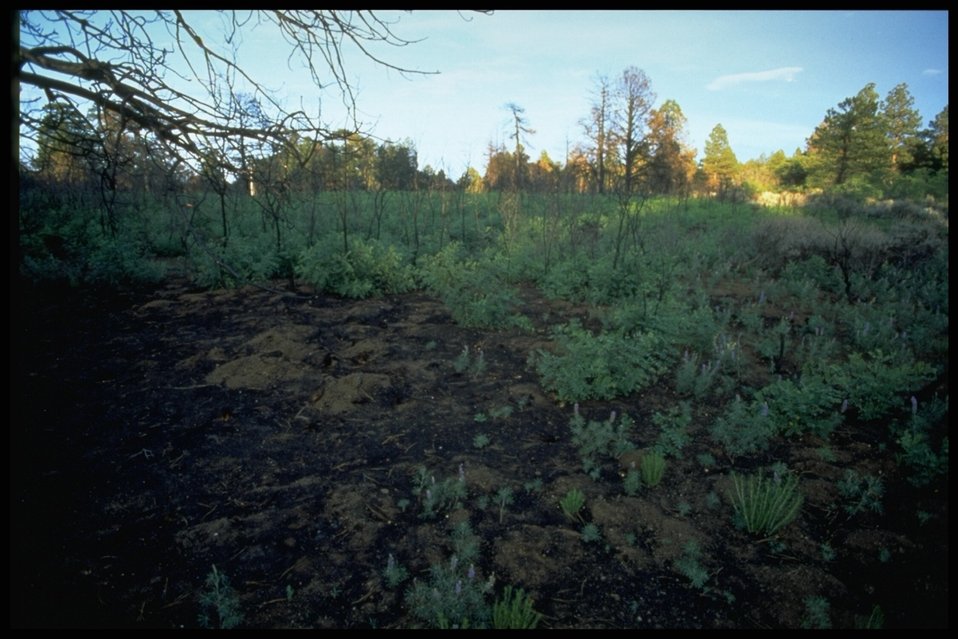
Little weeds and trees find shade for a little while longer as the sun rises on the Grand Canyon-Parshant National Monument.